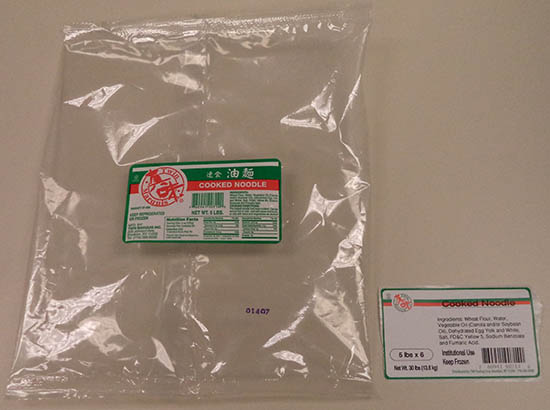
RECALLED – Cooked Noodle and Lo Mein Noodle

March 03, 2014 – Product Recall – Twin Marquis, Inc Issues Allergy Alert on Undeclared Milk in Specific Lots of its Cooked Noodle and Lo Mein Noodle.